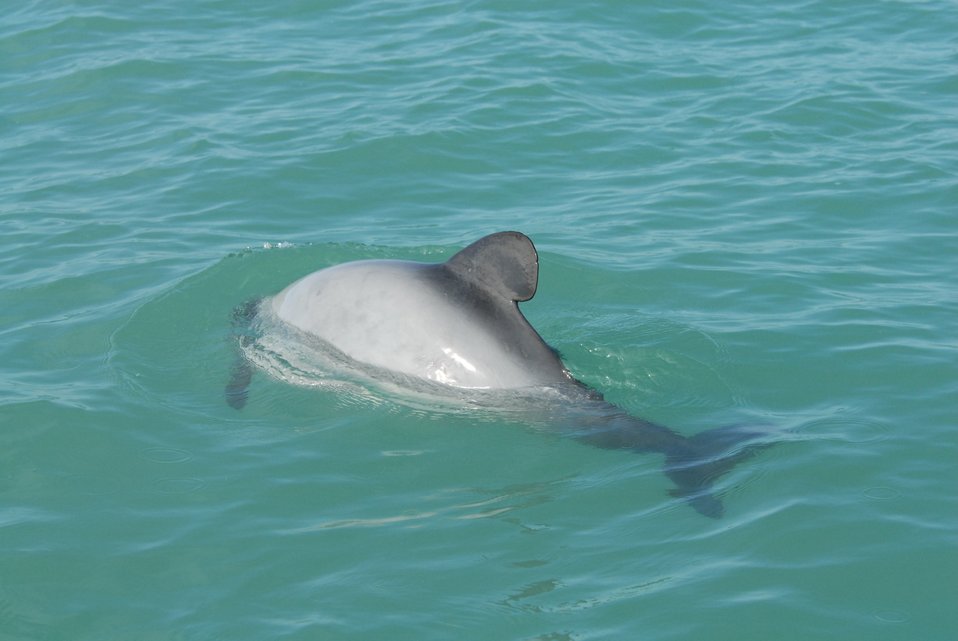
Hector's dolphin (Cephalorhynchus hectori) - the smallest of the dolphin family is found only in New Zealand waters. It is usually about 1.4 meters in length.